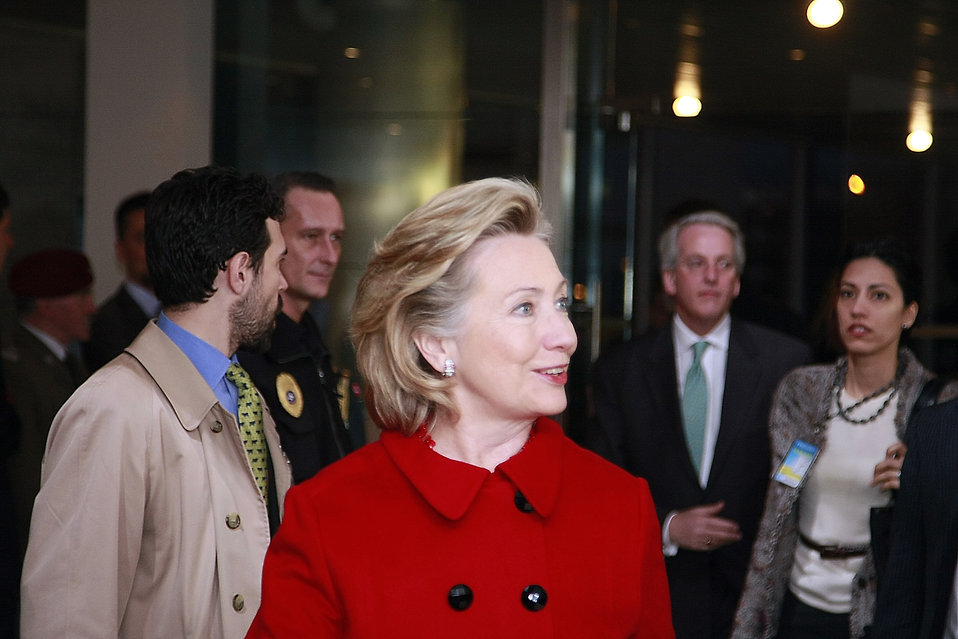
Secretary Clinton at NATO

U.S. Secretary of State Hillary Rodham Clinton meets with Belgian officials at Val Duchesse in Brussels, Belgium December 4, 2009.